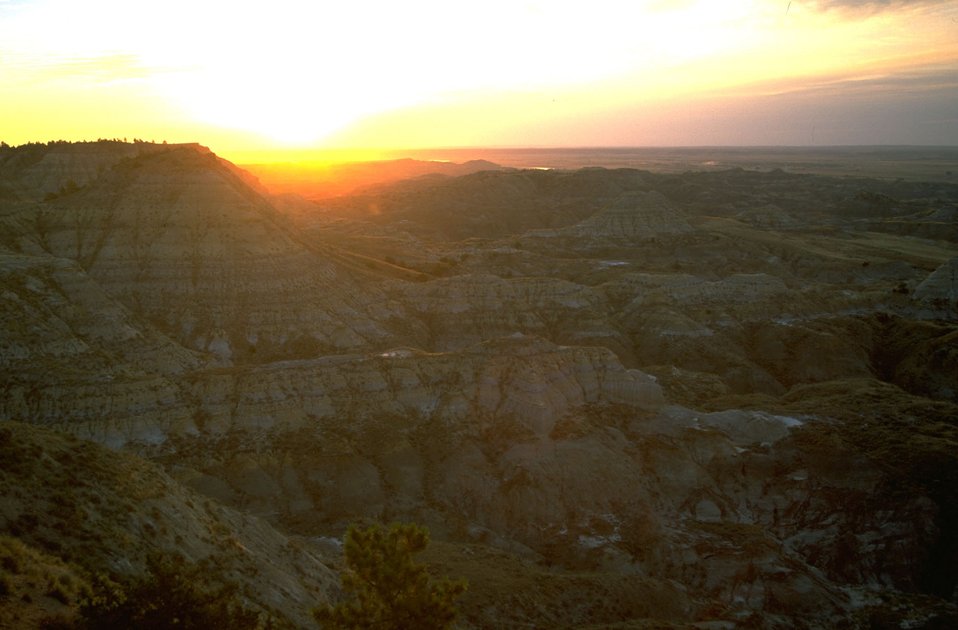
Sun setting over the Terry Badlands